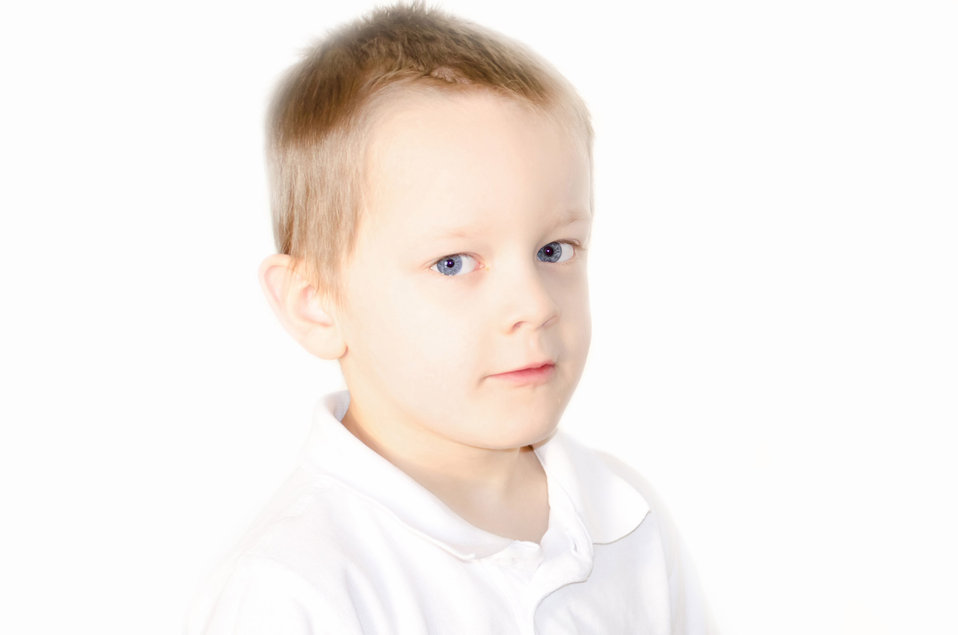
Child - portrait.